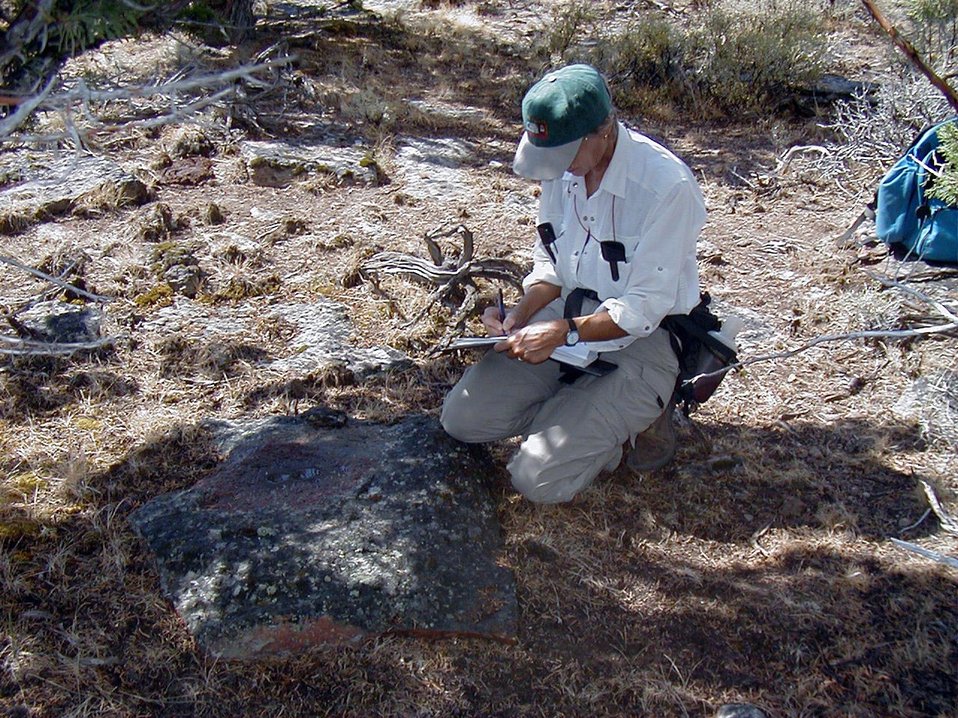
Oregon Archaeological Society and other volunteers have contributed thousands of hours of labor to on-going archaeological work at Burns BLM sites.